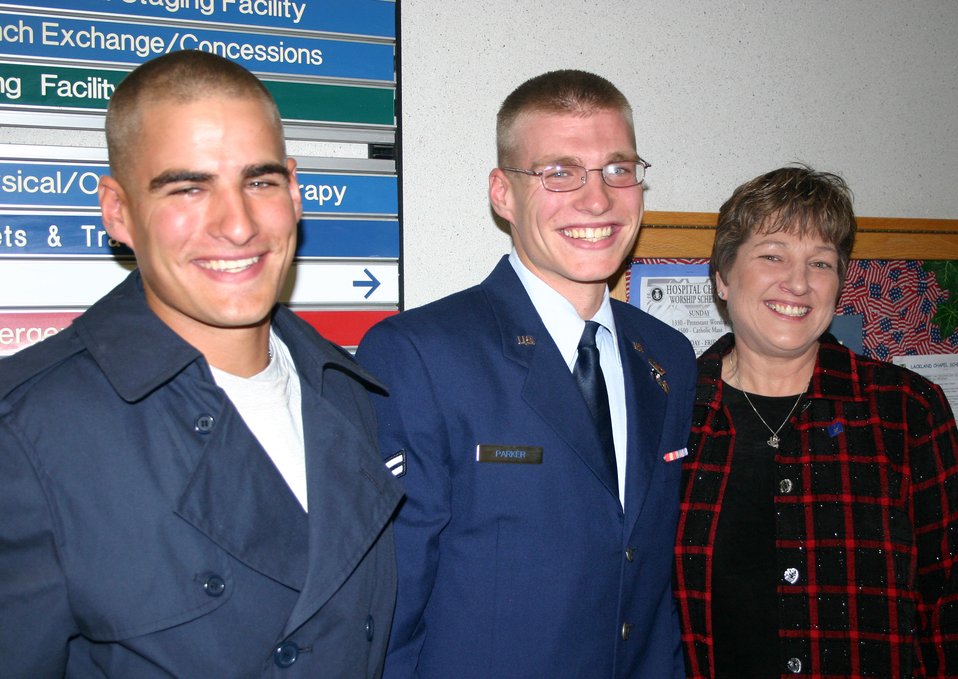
Graduation surprise

Airman 1st Class David Parker (left), an Aeromedical Services Apprentice Phase II student here at Wilford Hall Medical Center, was not expecting to see his mother, Cathie Parker (right), and brother, Jonathan Parker, at his graduation ceremony held in the 59th Medical Wing Chapel Wednesday. The surprise was obvious on the young Airman's face as he was seated one row in front of his family during the ceremony. The surprise was coordinated by his military training leader, Master Sgt. Richard Righetti, and Mrs. Parker.